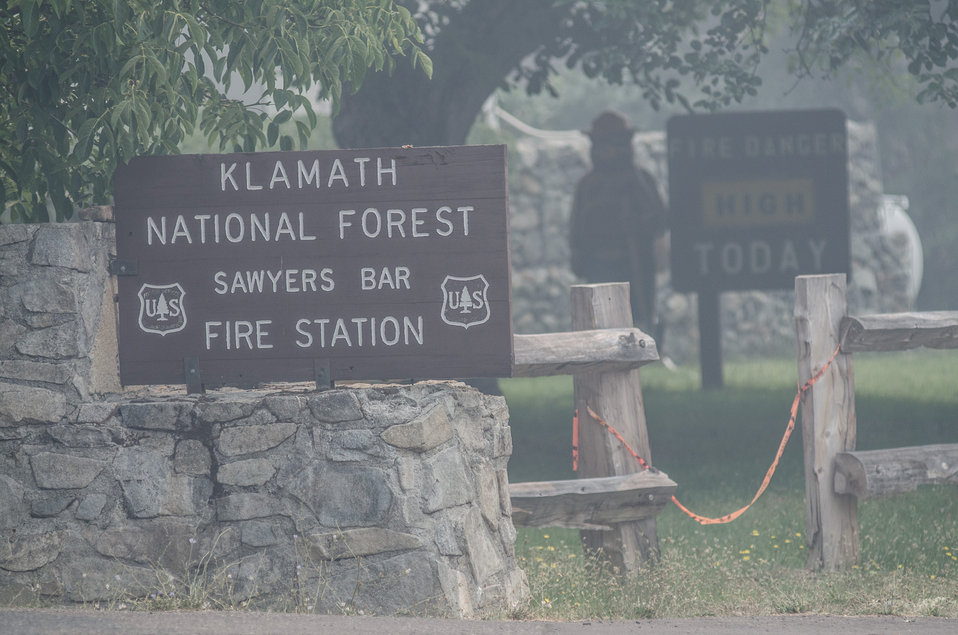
Smoke permeates the air of Sawyers Bar, CA, on Wednesday, Aug. 6, 2013. Salmon River Complex Fire is northwest of Sawyers Bar and west of Etna and Yreka, CA in the Klamath National Forest.